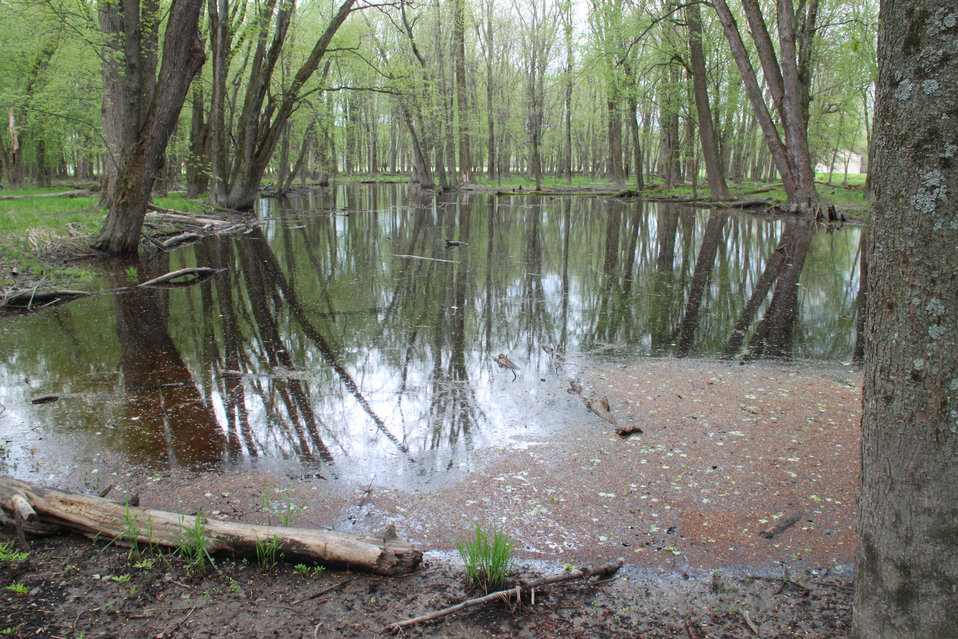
flooded forest

Silver Maple Floodplain Forest
Photo Credit: Ken Sturm; USFWS